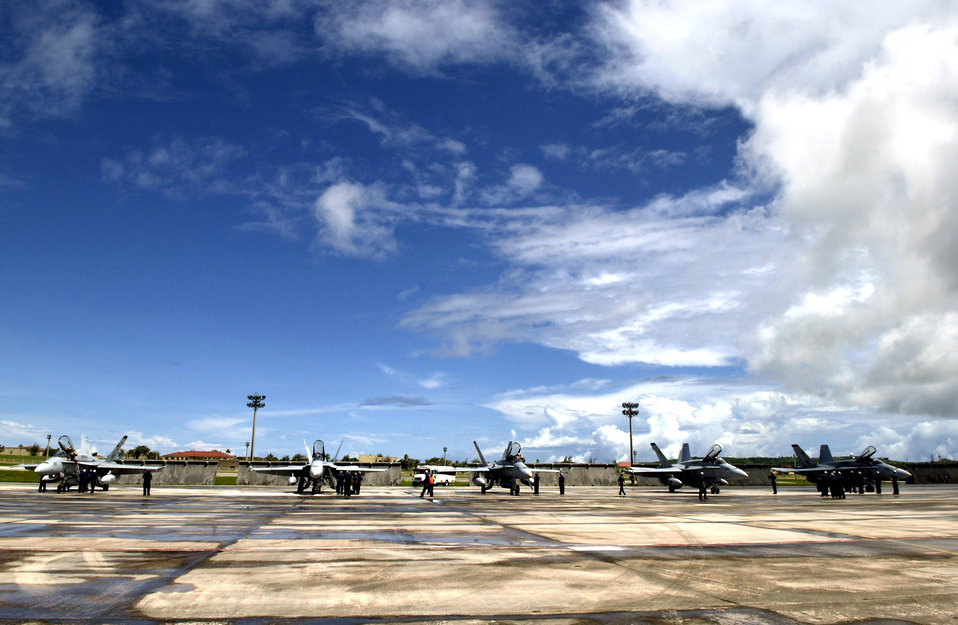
Airpower key to Exercise Valiant Shield

Navy F-18 Hornets from the Naval Air Station's Joint Reserve Base in New Orleans arrive to take part in the Valiant Shield exercise Aug. 6 at Andersen Air Force Base, Guam. During the exercise, Air Force aircraft and Airmen from stateside bases and Kadena Air Base, Japan, will comprise part of an expeditionary air wing based at Andersen AFB. These forces will participate in integrated joint training with Navy and Coast Guard forces.